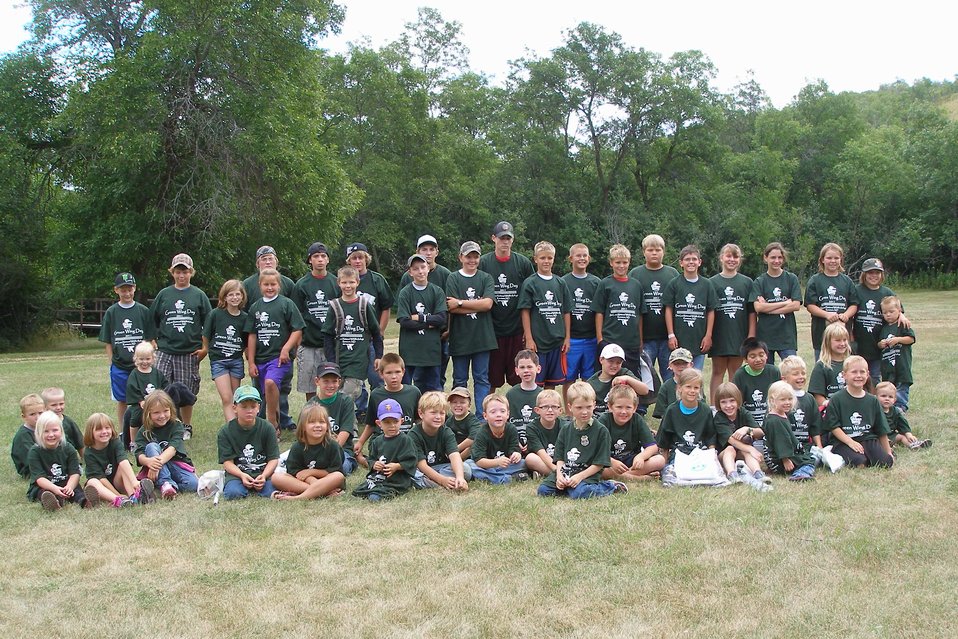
2011 Greenwing Day - Des Lacs Refuge

Des Lacs National Wildlife Refuge Greenwing Day 2011, Taskers Coulee

Greenwing Day is an annual event held at the Refuge offering exciting outdoor fun for youth! This year, over 60 kids ranging in age from 1 to 16 years old participated.

The Greenwing Program is sponsored by Ducks Unlimited. To learn how to sign up your youngster as a 'Greenwing,'